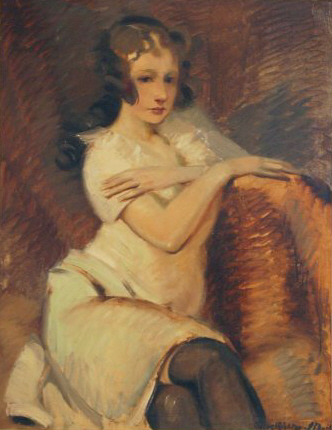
Georg Richter-Lößnitz Mädchenbildnis c1915